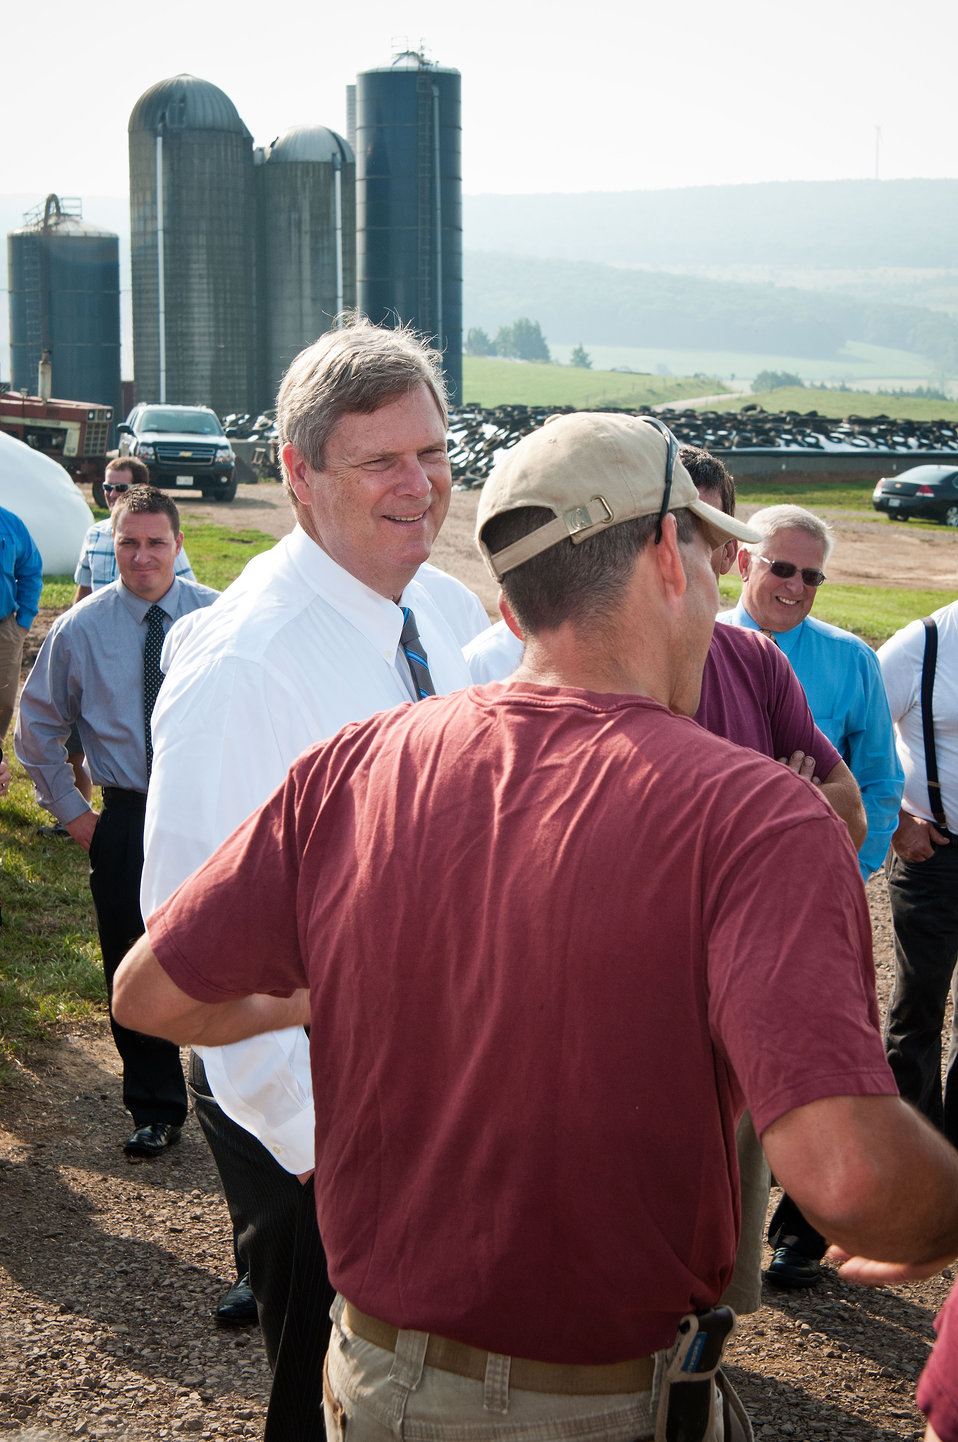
Agriculture Secretary Tom Vilsack (left) listens to Duane Stoltzfus (right) of Pennwood Dairy Farms explain the operation of the anaerobic digester the dairy uses to produce energy to operate the farm. An anaerobic digester is a component of a waste management system that provides biological treatment in the absence of oxygen. The digester captures biogas for energy production, manages odors, reduces the net effect of greenhouse gas emissions, and reduces pathogens. The anaerobic digester practice is part of a planned conservation management system that manages manure and/or comprehensive nutrient management system. Secretary Vilsack visited the farm in Berlin, PA on Tuesday, July 17, 2012.